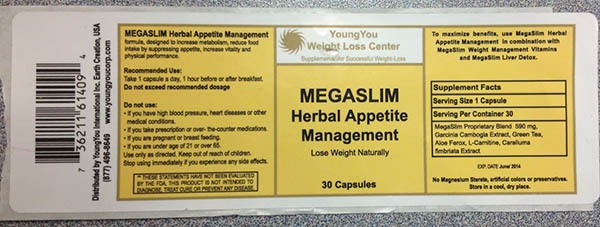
RECALLED – Mega Slim Herbal Appetite Management Dietary Supplement

January 30, 2014 – Product Recall – YoungYou International Issues Voluntary Recall of Mega Slim Herbal Appetite Management Pills Due to Presence of DMAA.